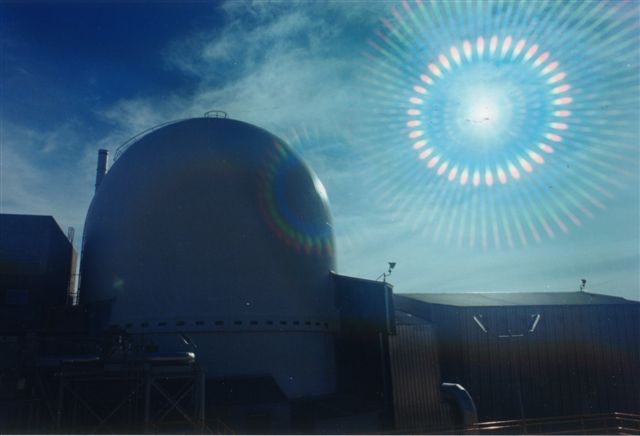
Recovery Act work

The Experimental Breeder Reactor-II (EBR-II), shown here, provided most electricity needed at Argonne National Laboratory-West's facilities for 30 years. It was shut down in 1994 and transferred to Idaho National Laboratory in 2005, where significant progress has been made toward decontaminating the site and preparing the reactor for demolition.